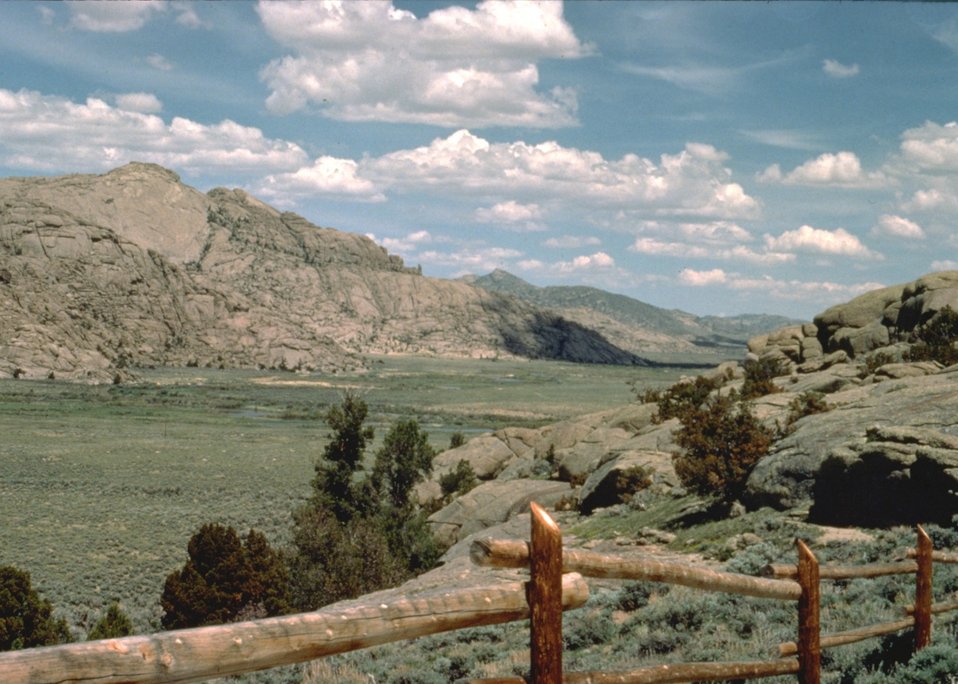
Scenic rock site.